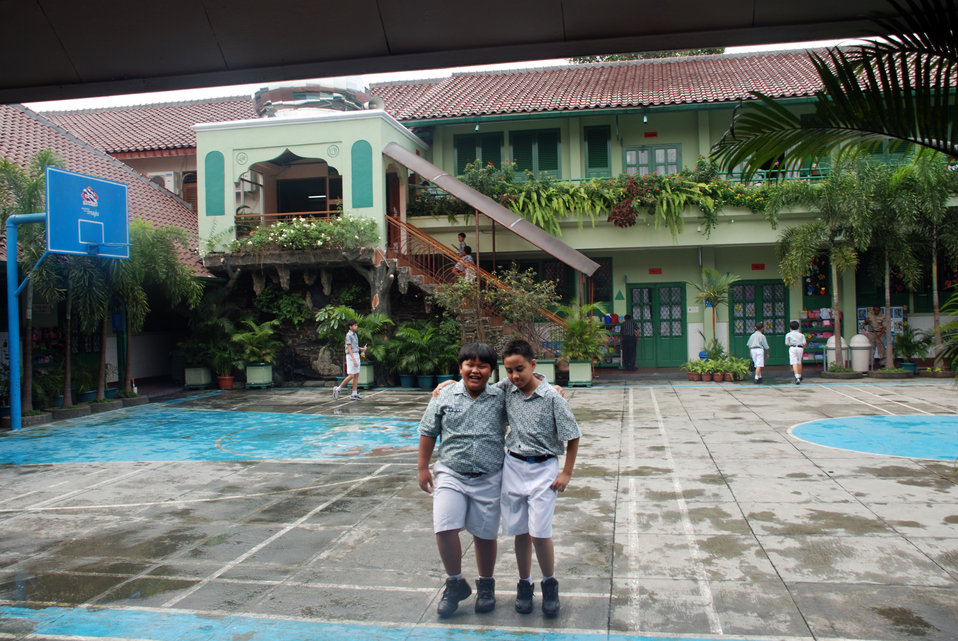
Behind the Scenes: Indonesian Students Prepare for Secretary Clinton's Arrival

Menteng Elementary School No. 1 students relax before U.S. Secretary of State Hillary Rodham Clinton arrives in Jarkarta, Indonesia during the visit of U.S. Secretary of State Hillary Rodham Clinton February 18, 2009.